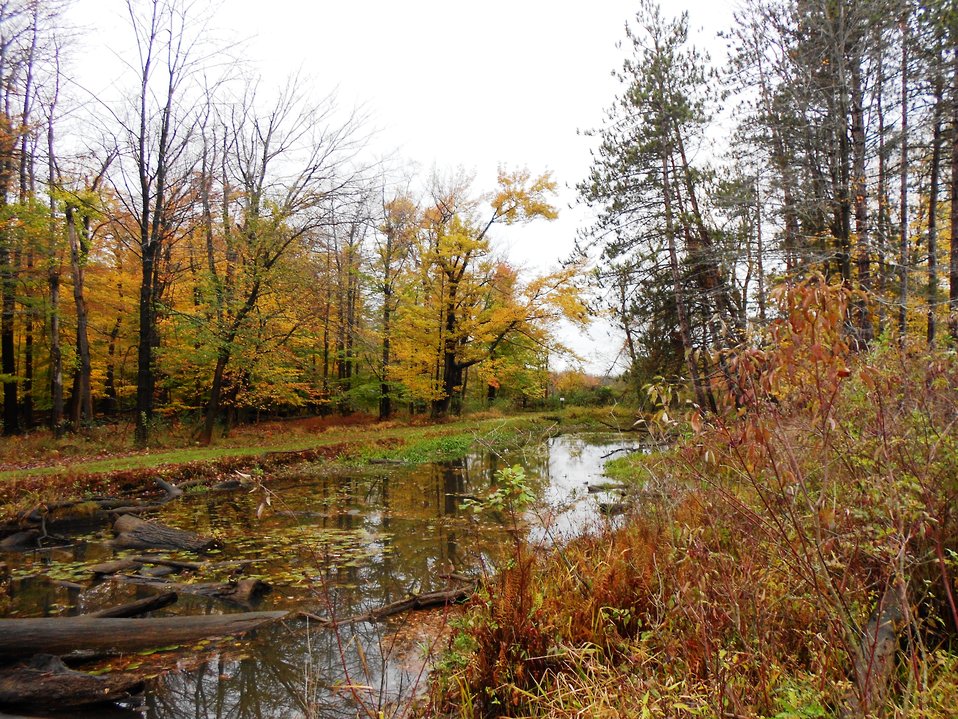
Small wetland area at Reinstein Woods Nature Preserve

Autumn colors were on full display despite an overcast morning